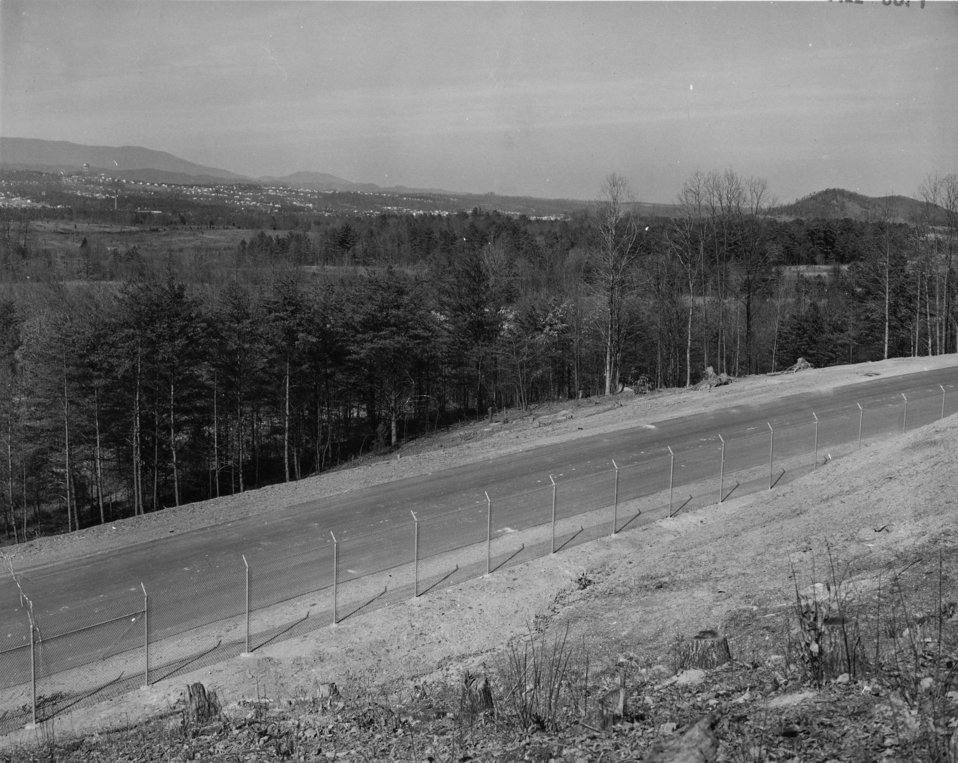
Aerial of Oak Ridge